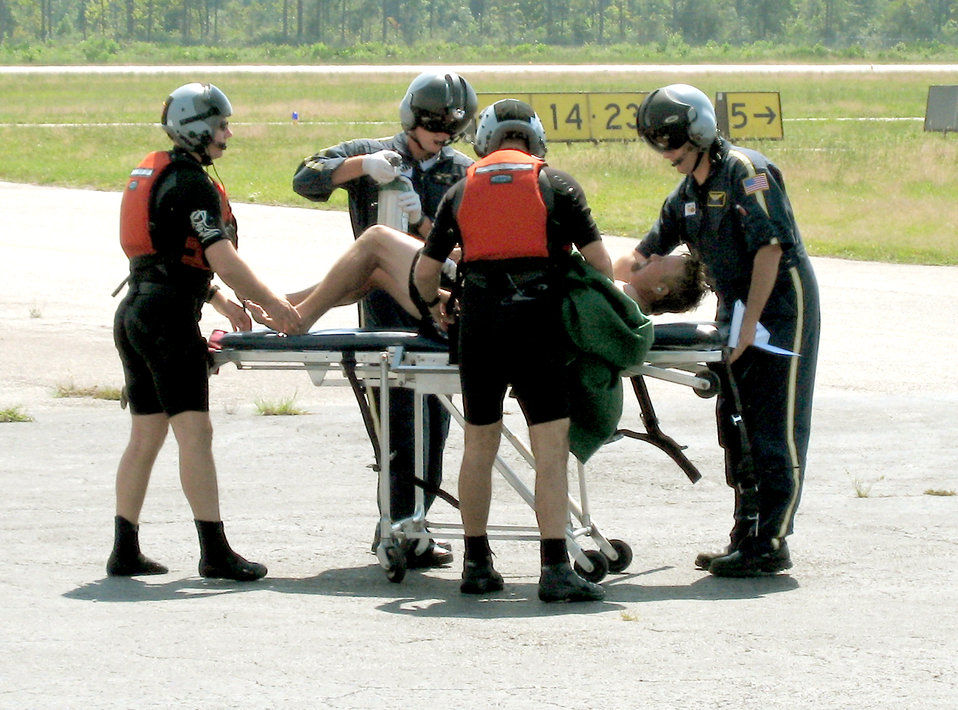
Air Force Reserve rescue crews save missing boater

Master Sgt. Chad Evans and Staff Sgt. Joel Corbett transfer a boater they rescued 15 miles off the coast of Jacksonville, Fla., Oct. 1. The NCOs are Air Force Reserve pararescuemen assigned to the 308th Rescue Squadron at Patrick Air Force Base, Fla.